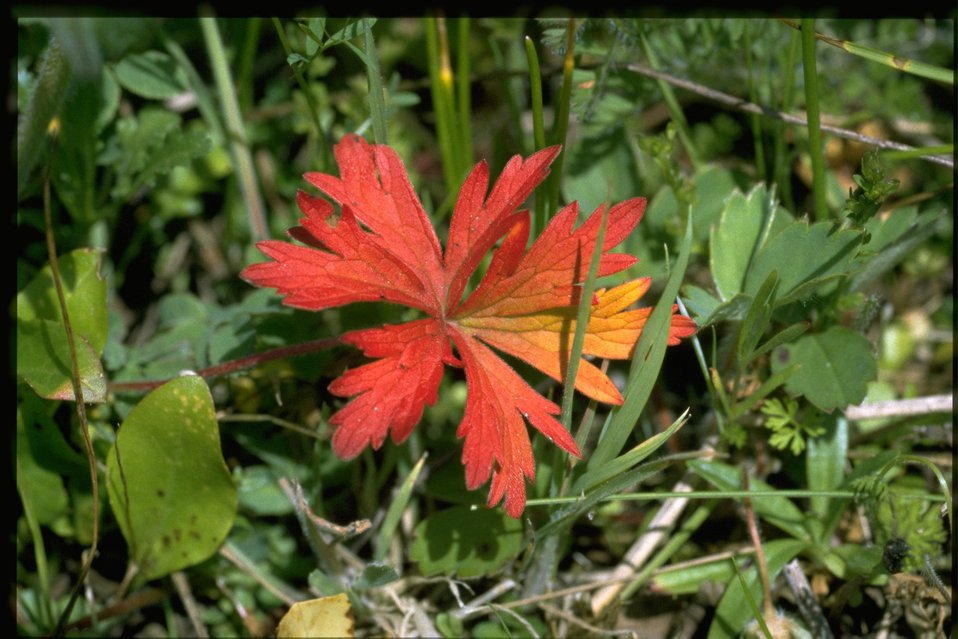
Medium shot of Geranium leaf.